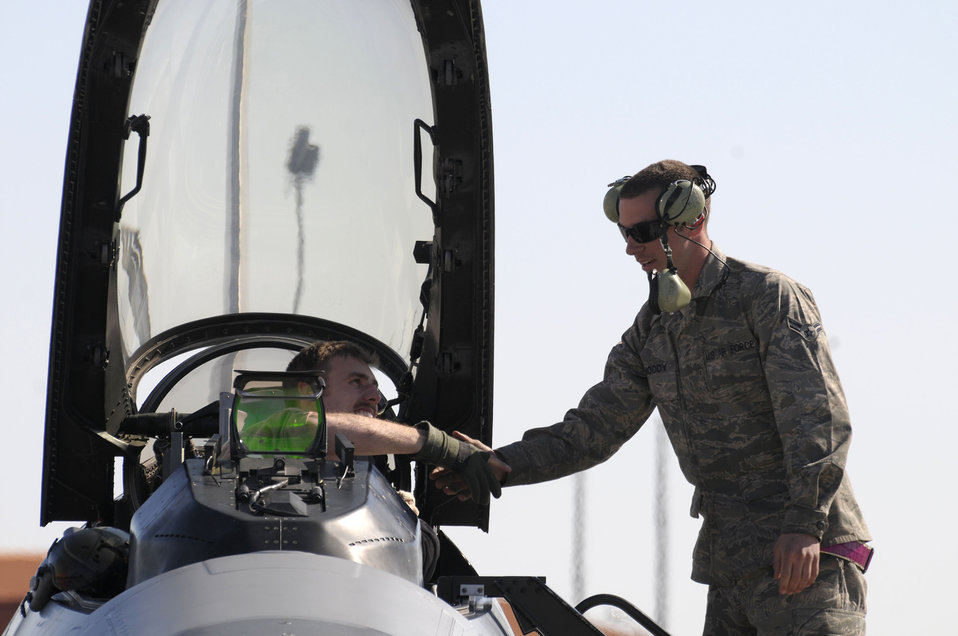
Odyssey Dawn

A 31st Fighter Wing F-16 Fighting Falcon pilot receives a handshake from a member of his flight crew at Aviano Air Force Base, Italy, after returning from supporting Joint Task Force Odyssey Dawn on March 20, 2011. Joint Task Force Odyssey Dawn is the U.S. Africa Command task force established to support the larger international response to the unrest in Libya. A broad coalition of nations are partnering to enforce U.N. Security Council Resolution (UNSCR) 1973, which authorizes all necessary means to protect civilians in Libya under threat of attack by Qadhafi regime forces. JTF Odyssey Dawn is commanded by Admiral Samuel J. Locklear, III.